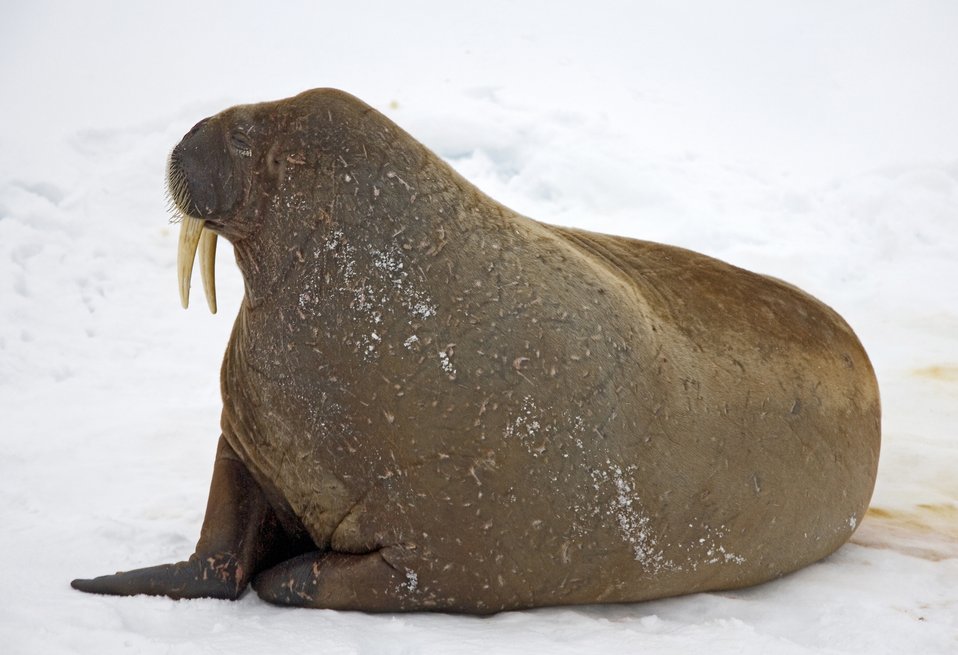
Walrus (Odobenus rosmarus rosmarus) hauled out on the ice.